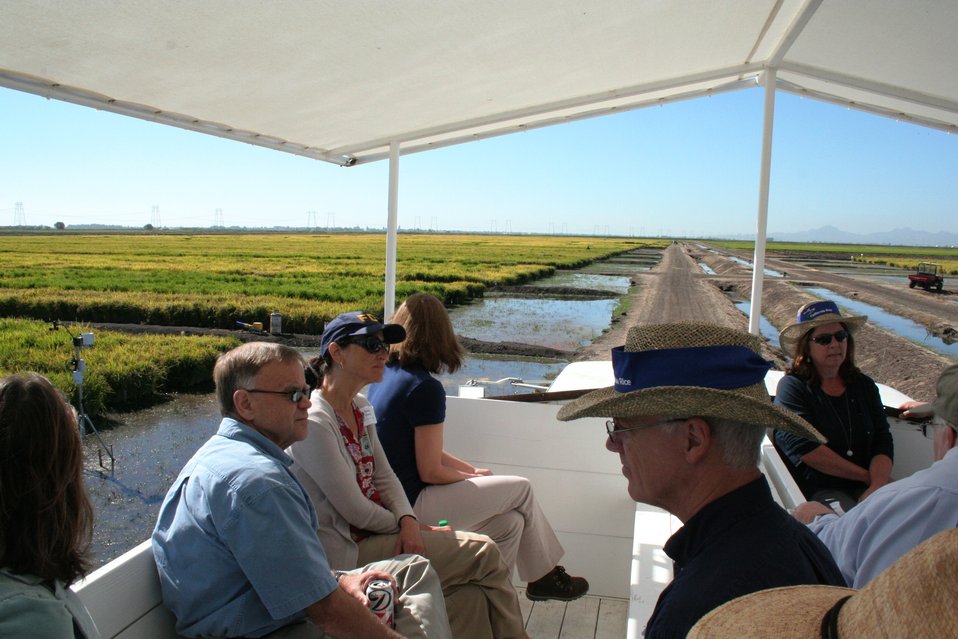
FDA's Rice Tour: Looking for Insights on Arsenic (0757)

FDA Commissioner Margaret A. Hamburg and colleagues visited research facilities and rice farms in California on Sept. 4-5, 2013 in an effort to gain a greater understanding of the presence of arsenic in rice. They toured the facilities and research fields at the Rice Experiment Station in Biggs, Calif. For more information, read the FDA Voice blog:

• On Farms and in Labs, FDA and Partners Are Working to Get Answers on Arsenic in Rice